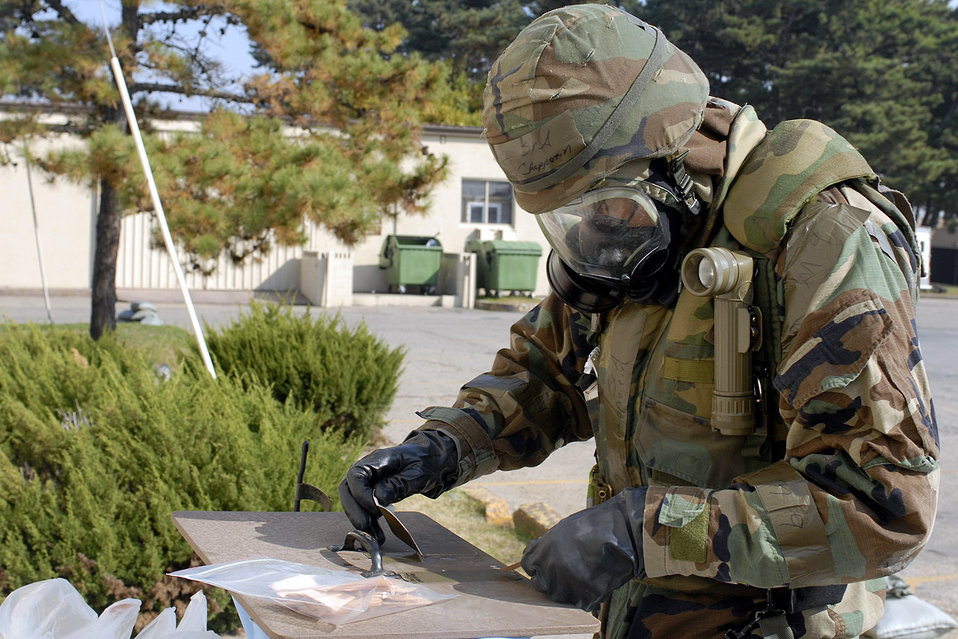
Testing readiness at Kunsan

Senior Airman Argelio Chappotin checks M-8 paper during a general release after a simulated missile attack during the Peninsula Operational Readiness Exercise Nov. 8 at Kunsan Air Base, South Korea. The exercise was conducted to ensure base members remain ready to execute its mission. Airman Chappotin is assigned to the 8th Civil Engineer Squadron.